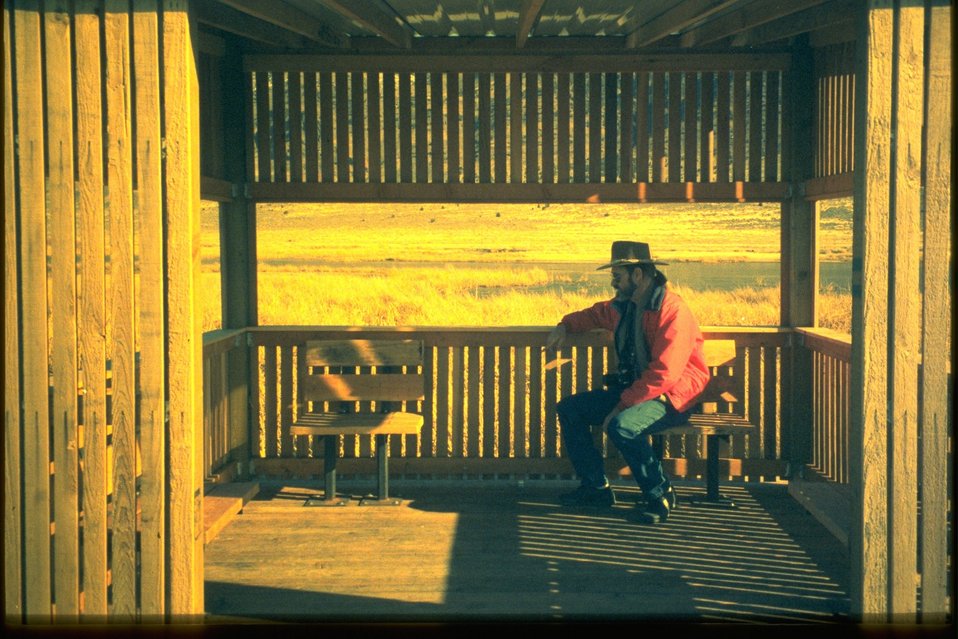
Viewing platform at Warner Wetlands.